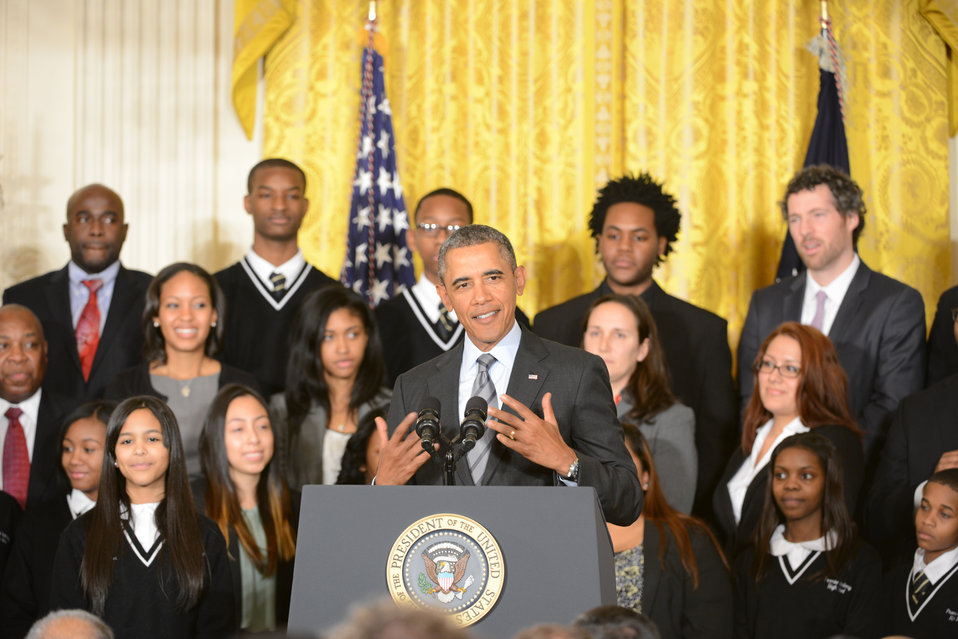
President Barack Obama announces the first five “Promise Zones,” located in San Antonio, TX, Philadelphia, PA, Los Angeles, CA, Southeastern Kentucky, and the Choctaw Nation of Oklahoma.